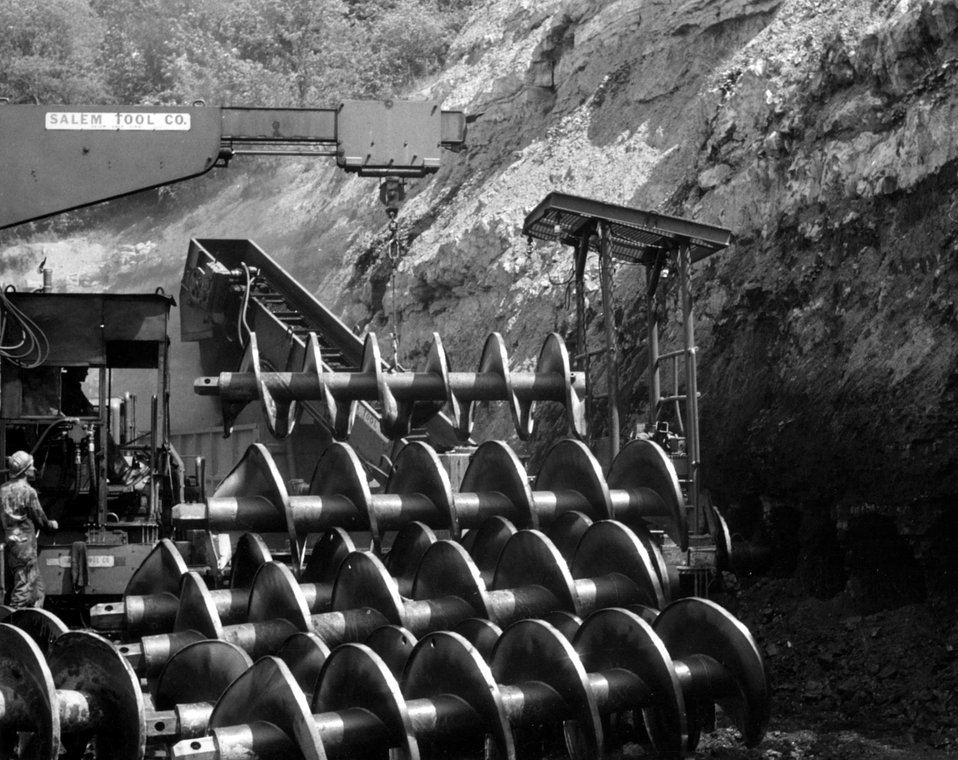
Auger mining machine
c.1966